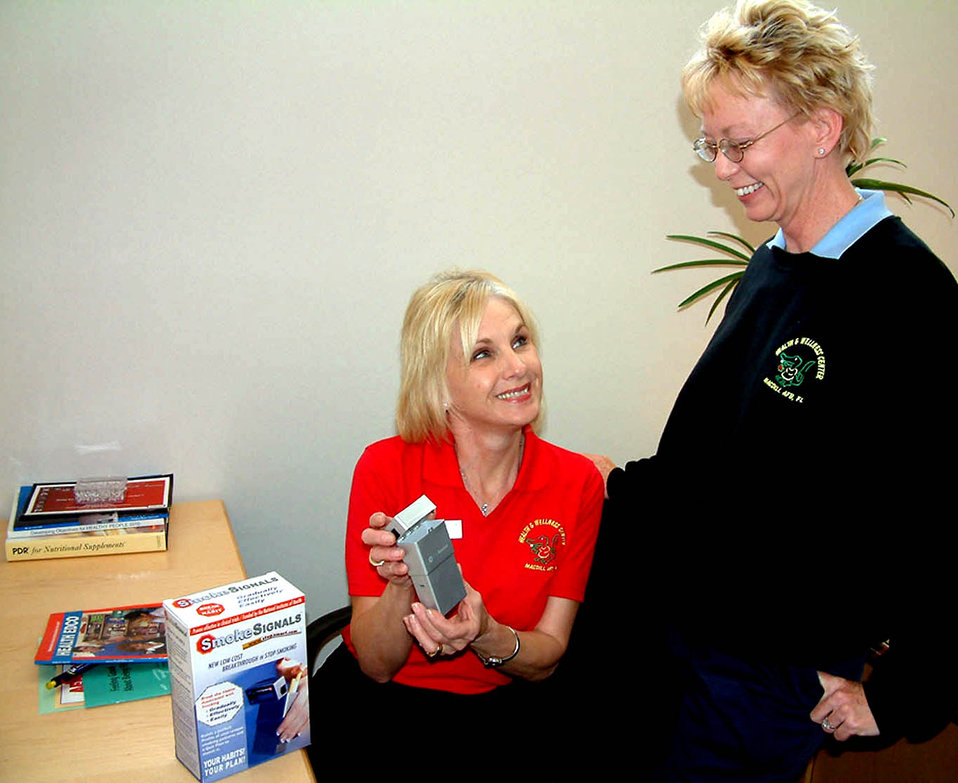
New program helps smokers kick habit

MACDILL AIR FORCE BASE, Fla. -- Joan Craft (left) and Capt. Diane Klingenberg examine a new SmokeSignals device being integrated into the smoking cessation program. Ms. Craft is the health and wellness center director here, and Captain Klingenberg is assigned to the 6th Aerospace Medical Squadron.